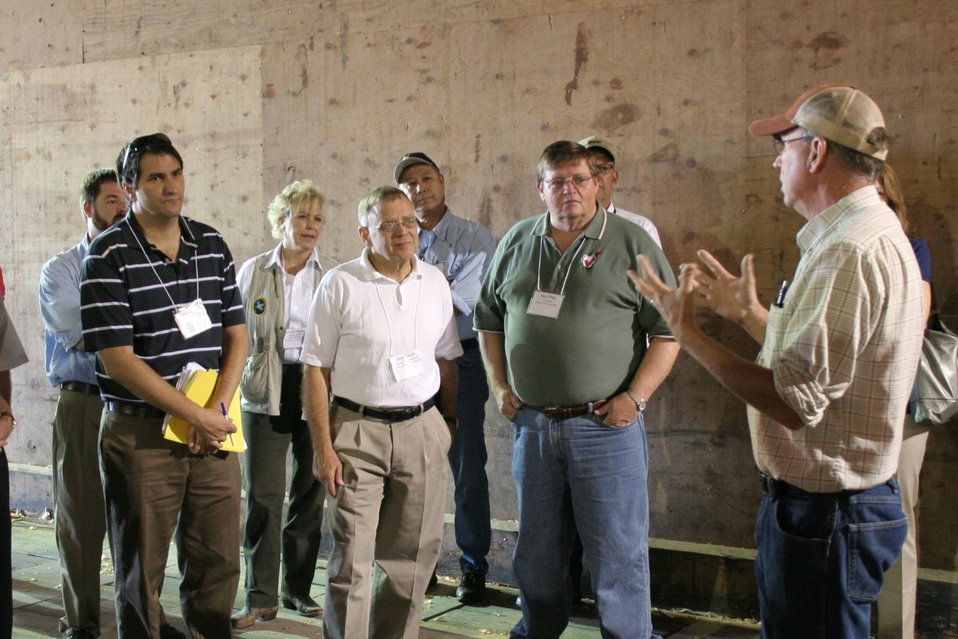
On the Road with Mike Taylor

Bob Simerly (far right), an agronomist at McCain Foods USA, in Fruitland, Idaho, describes the bulb onion curing process to FDA Deputy Commissioner Michael Taylor (center left) and others. Mike and colleagues started a five-day tour of the Pacific Northwest on Sunday, Aug. 11, 2013 -- visiting Idaho, Oregon and Washington -- to get a first-hand look at produce production and irrigation operations, and to discuss the proposed Produce Safety Rule with growers, food industry representatives and state officials. For more about Mike's multi-region tour, read these FDA Voice blog posts:

• Hearing the Concerns of Maine Growers Striving for Agricultural Diversity
• On the Road with Mike Taylor: Touring the Pacific Northwest
• On the Road with Mike Taylor, Day 2: Frank Talk in Farm Country
• On the Road with Mike Taylor, Day 3: Families and Partnerships
• On the Road with Mike Taylor, Day 4: Looking to the Future